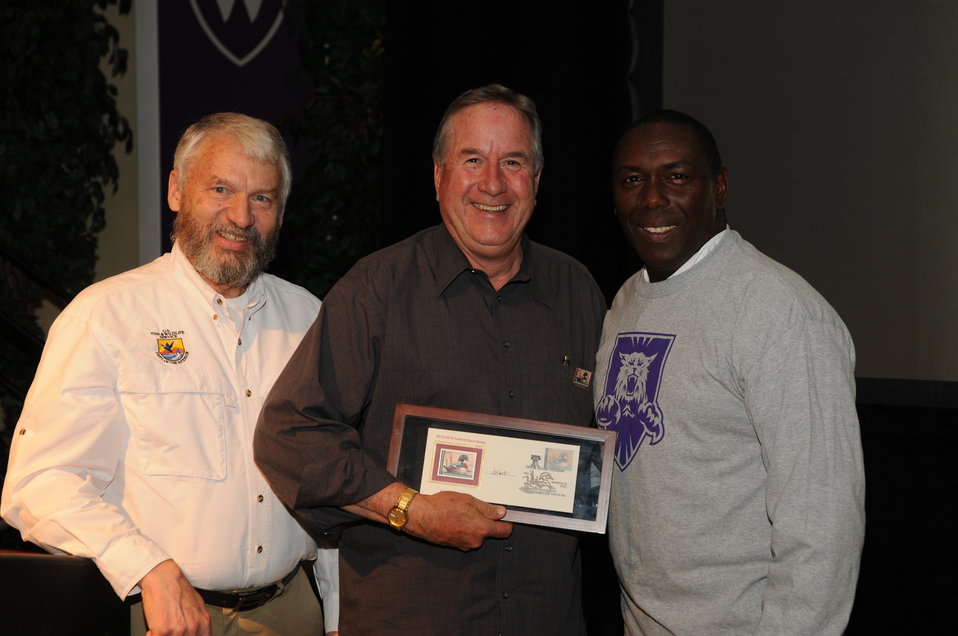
Judge Recognition

The U.S. Fish & Wildlife Service sponsored the 2012 Federal Duck Stamp Art Contest September 28 and 29 in Ogden, Utah, at Weber State University. A panel of five judges was responsible for choosing the art work used to design the 2013-2014 Migratory Bird Hunting and Conservation Stamp.